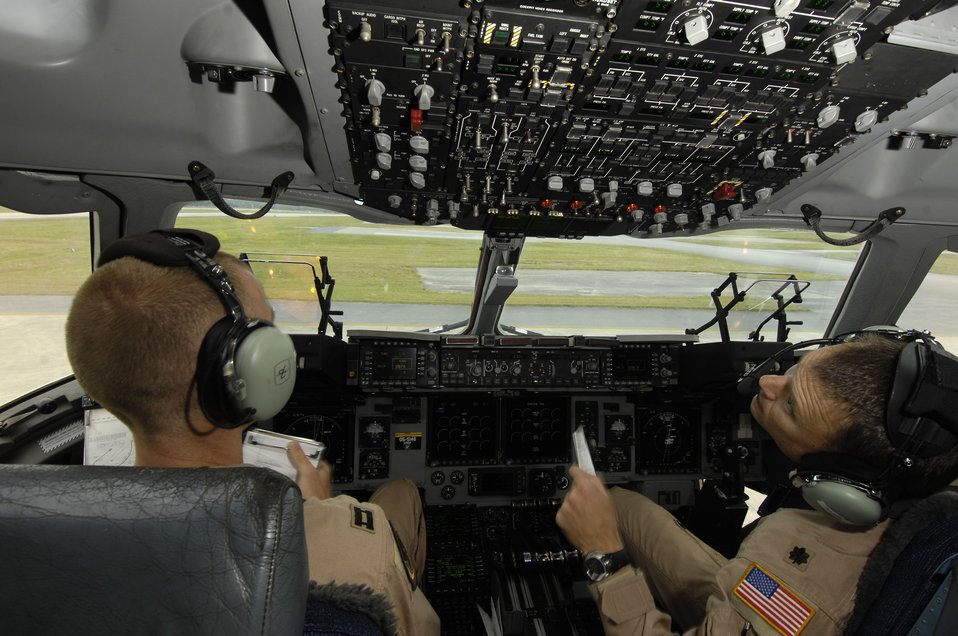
C-17 Reaches Across the Globe

Co-Pilot Carson Dodds of Orlando, Calif. and a member of the 535th Airlift Squadron at Hickam Air Force Base, Hawaii, and 535th Airlift Squadron Commander Lt. Col Casey Eaton prepare systems so their C-17 Globemaster III can depart Kadena Air Base, Japan, Dec. 29, 2008. The C-17 crew started at Hickam which illustrates the global reach capabilities of the Air Force across the globe.